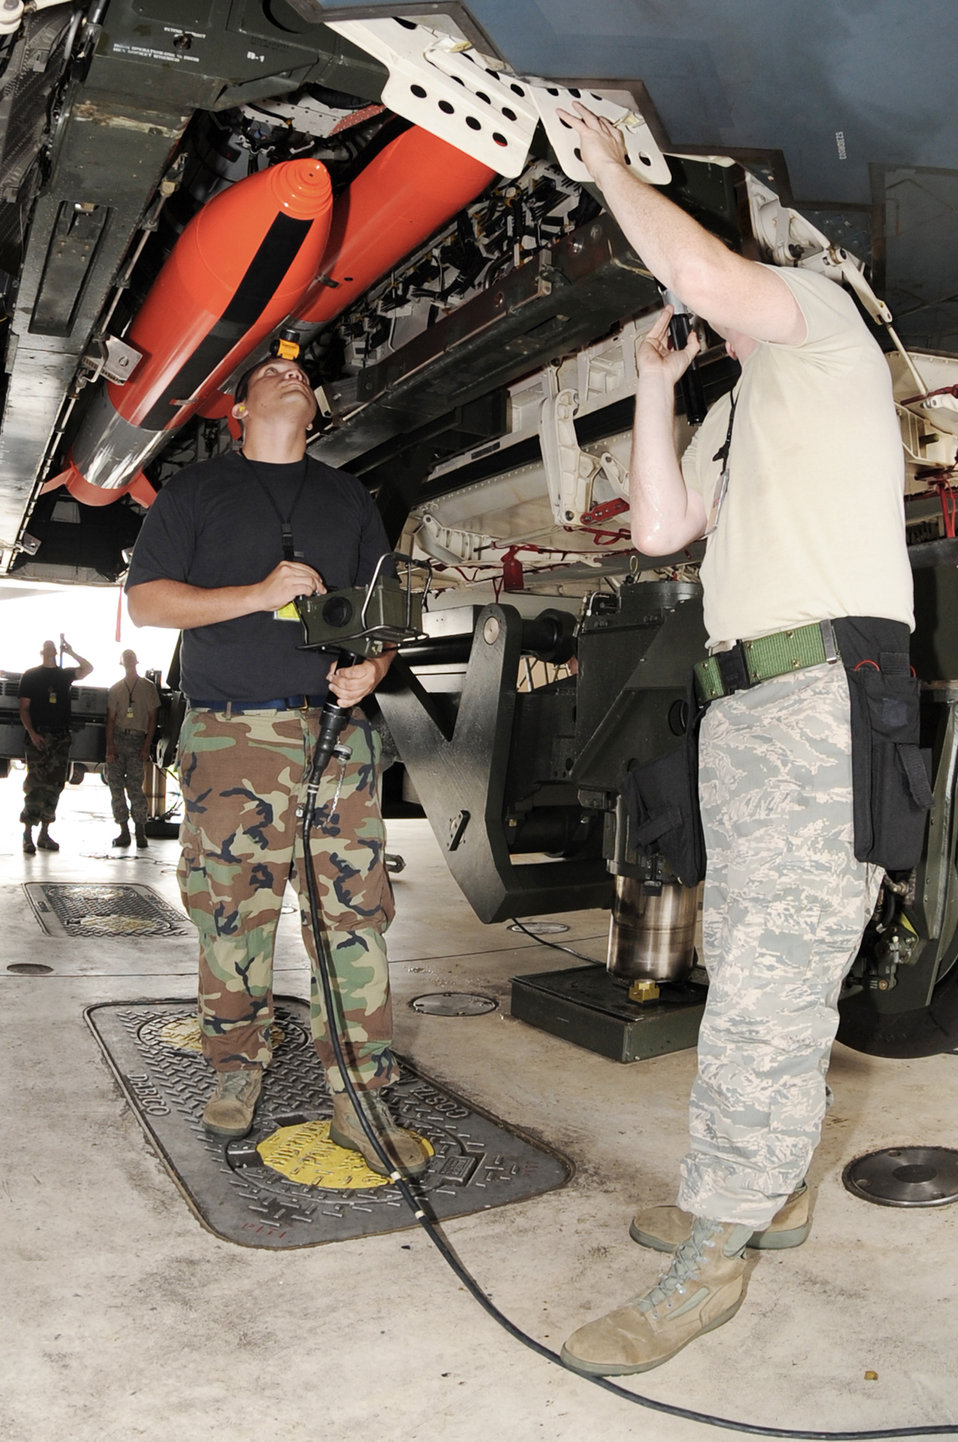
Whiteman Airmen test nuclear weapon mission

Tech. Sgt. Damen Cipolla inspects the rotary launch assembly as it's being lifted into a B-2 as Senior Airman Gregory Lowe runs the controls to lift the assembly into place Aug. 17, 2009 at Whiteman Air Force Base, Mo. This Inspection is one of the first inspections to fall under Air Force Global Strike Command since the command stood up. Sergeant Cipolla is assigned to the 509th Aircraft Maintenance Squadron.